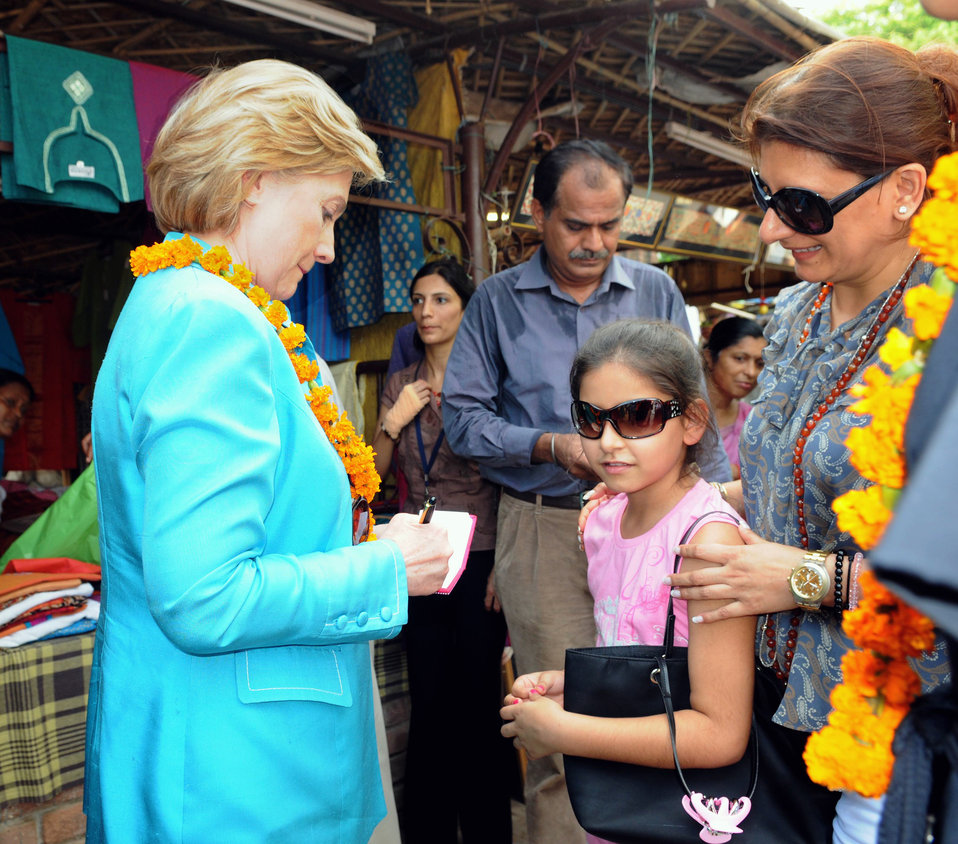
Secretary Clinton Visits Local Shops in New Delhi

U.S. Secretary of State Hillary Rodham Clinton shops at Dilli Haat, New Delhi, India July 19, 2009.